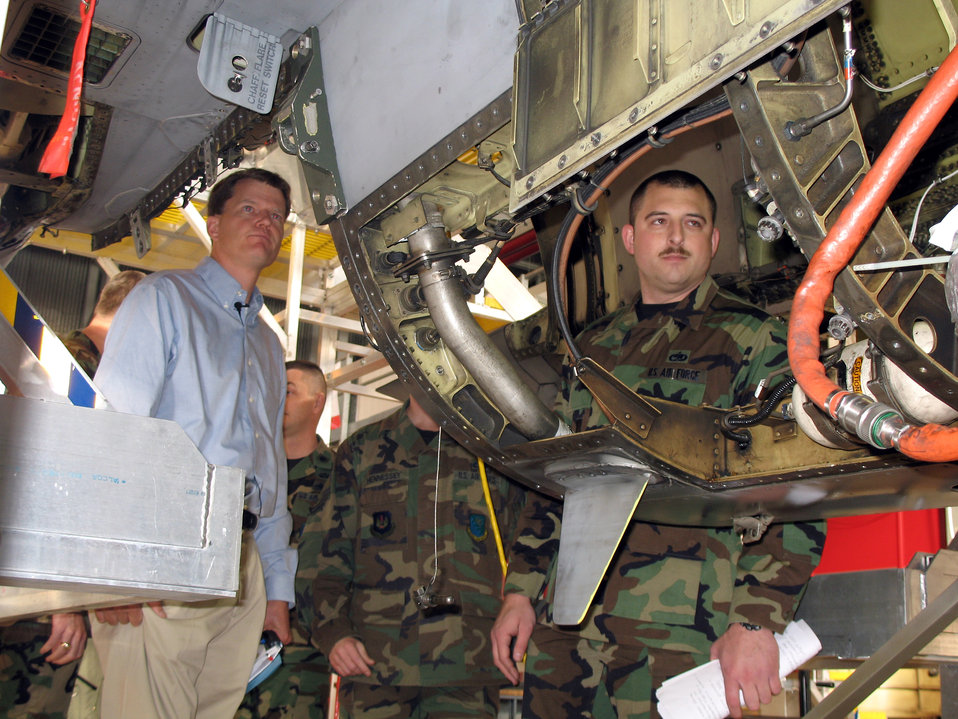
AFSO 21 @ Aviano

Master Sgt. Ben Carson (right) shows Dr. Ron Ritter, the underside of an F-16 Fighting Falcon. Dr. Ritter is the secretary of the Air Force's special assistant for Air Force Smart Operations 21. He visited Aviano Air Base, Italy, Nov. 29 to see firsthand what improvements 31st Air Maintenance Squadron Airmen are making and how they are being implemented. Sergeant Carson is the 31st AMX inspection chief.